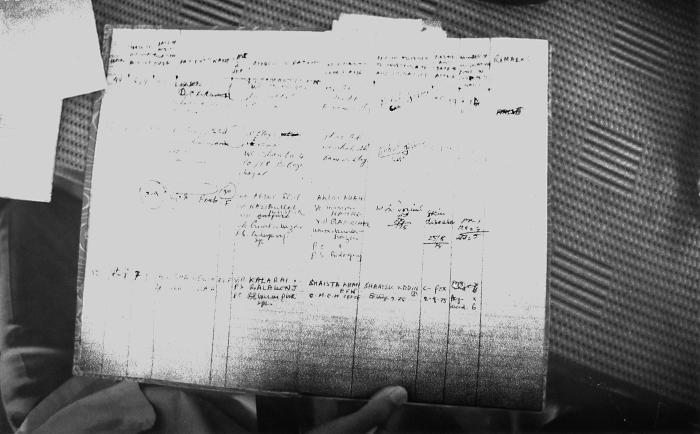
Though not entirely legible, this 1975 photograph depicted a chart, which contained information pertaining to the house to house search activities recorded by a smallpox eradication team member after a search through a Bangladesh community. Charts and maps were integral to achieving a successful smallpox eradication campaign outcome, for it enabled public health practitioners, and local volunteers to track smallpox cases once discovered, and inhabitants who'd been in contact with such cases using epidemiologically sound science.